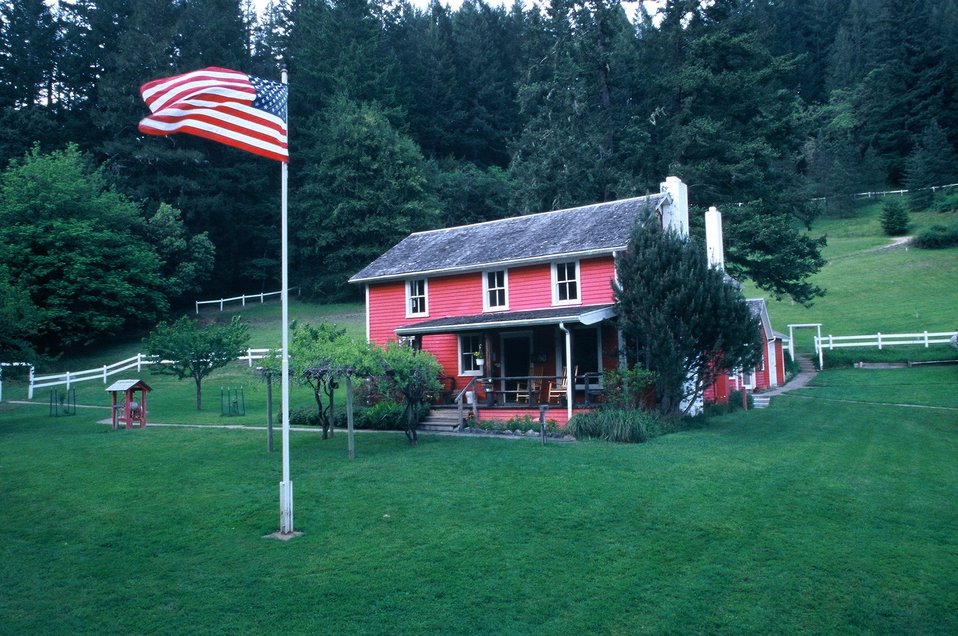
Wild section of the Rogue River from Grave Creek to Foster Bar May 19 to May 22.